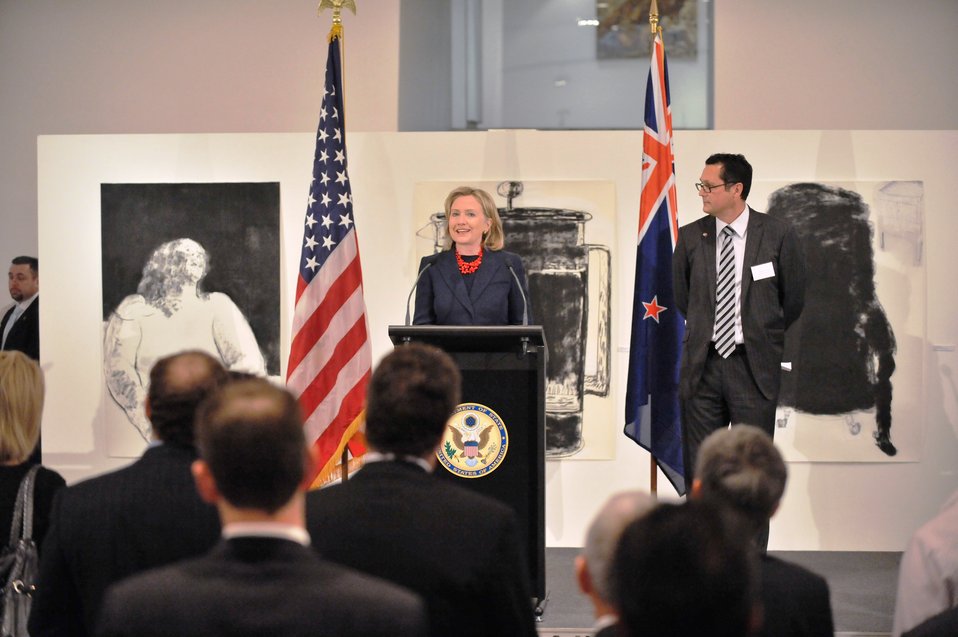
Secretary Clinton Delivers Remarks at Reception for U.S. Exporters

U.S. Secretary of State Hillary Rodham Clinton delivers remarks at a reception for U.S. exporters hosted by the American Chamber of Commerce at the Centre of Contemporary Art in Christchurch, New Zealand, on November 5, 2010. President of the American Chamber of Commerce in New Zealand Mark Fitzgerald is featured in the photo to the right of the Secretary.